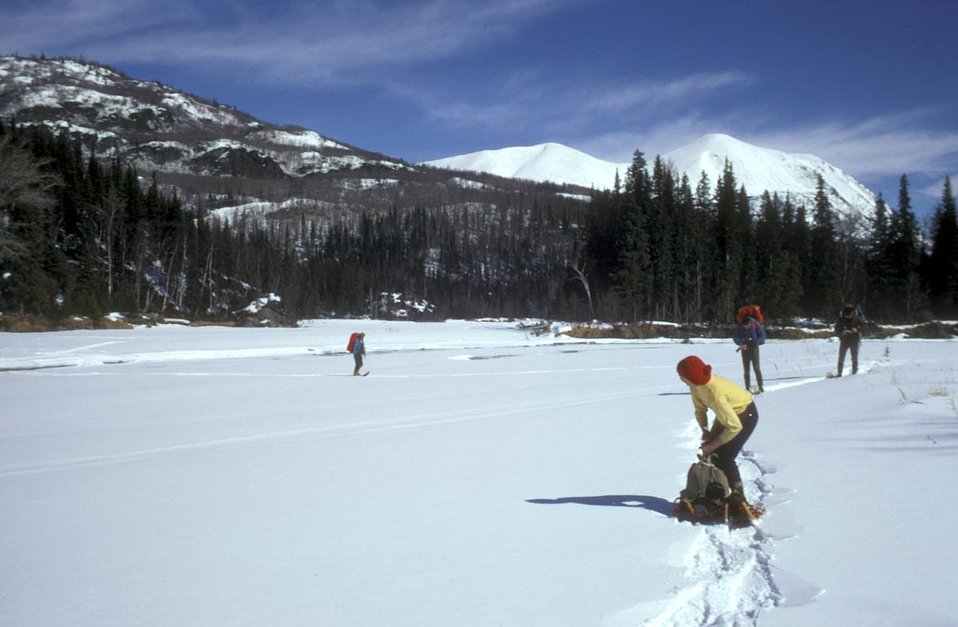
Snowshoeing in Alaska

Kenai Refuge, Alaska.